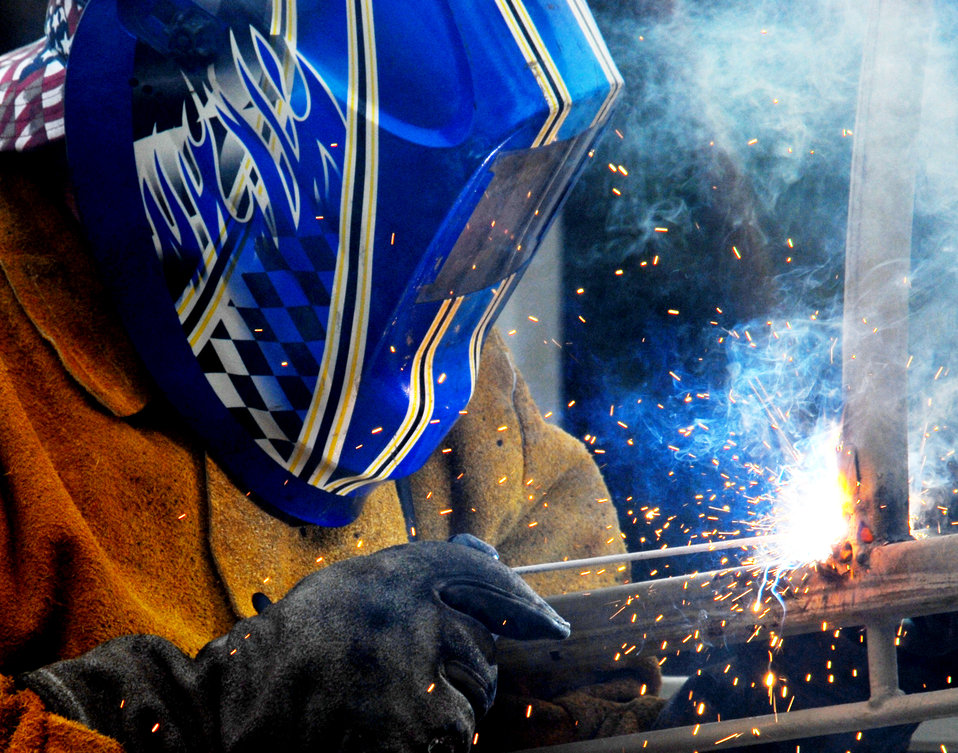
A spark-ling connection

A welder works on the steel frame of the conference center walkway canopy Feb. 24, 2010, at Eglin Air Force Base, Fla.